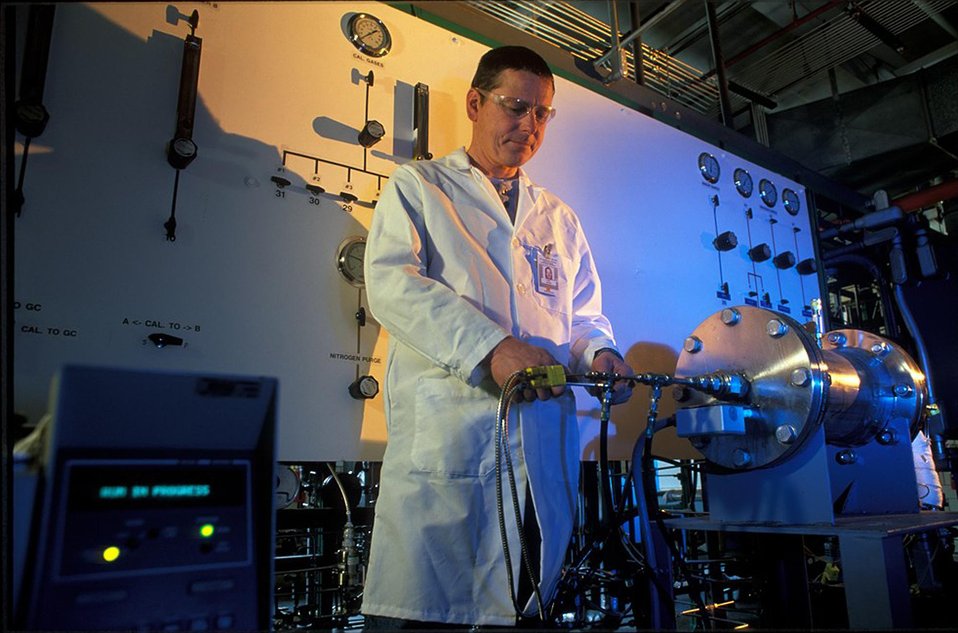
Paul Dieter prepares to test a metal-based hydrogen membrane in the testing facility at National Energy Technology Laboratory.

NETL has completed permeability testing of the 48th composite metal membrane foil for hydrogen separation. The focus of the project is to develop membranes with high hydrogen flux and selectivity, and improved mechanical durability for implementation to the gasification process. NETL has developed and operates unique facilities for testing the performance of membranes at temperatures (up to 1000c) and pressures ( up to 1000 psi) not available at other laboratories. Membranes are evaluated by testing attributes such as permeability, sealing, contaminate exposure, multi-constituent separation and durability. The focus of the group is to develop hydrogen and carbon dioxide separation technologies for the gasification process.